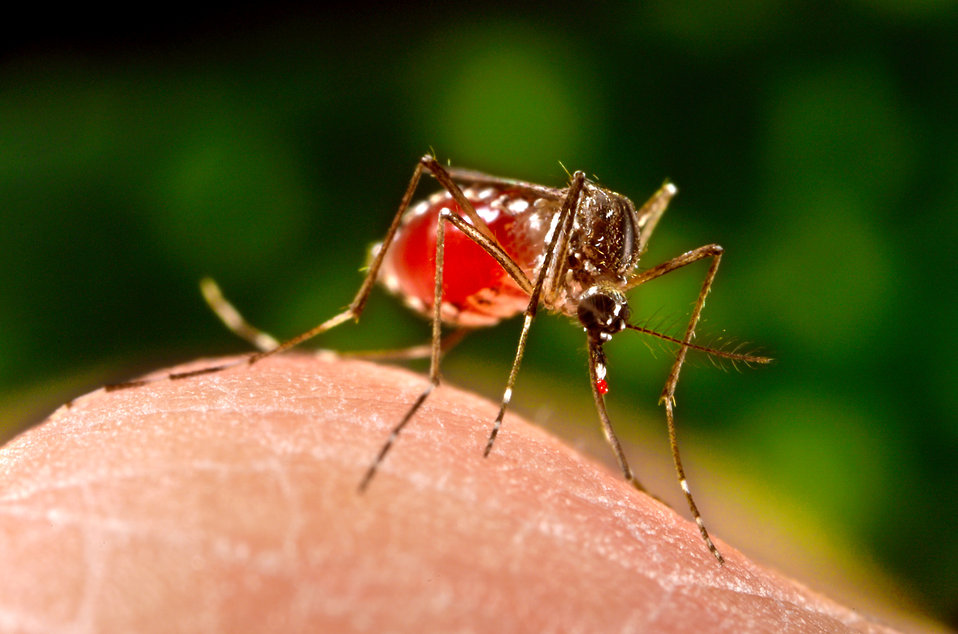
This 2006 image depicted a female Aedes aegypti mosquito as she was completing the activity of obtaining a blood-meal from a human host through the fascicle of her feeding organ known as the proboscis. Note the droplet of host blood remaining on the tip of her proboscis after she'd extracted the feeding organ from the skin surface. In this case, what would normally be an unsuspecting host was actually the CDC's biomedical photographer's own hand, which he'd offered to the hungry mosquito so that she'd alight, and be photographed while feeding. As it filled with blood, the abdomen became distended, stretching the exterior exoskeletal surface, thereby, causing it to become transparent, allowing the collecting blood to become visible as an enlarging intra-abdominal red mass.